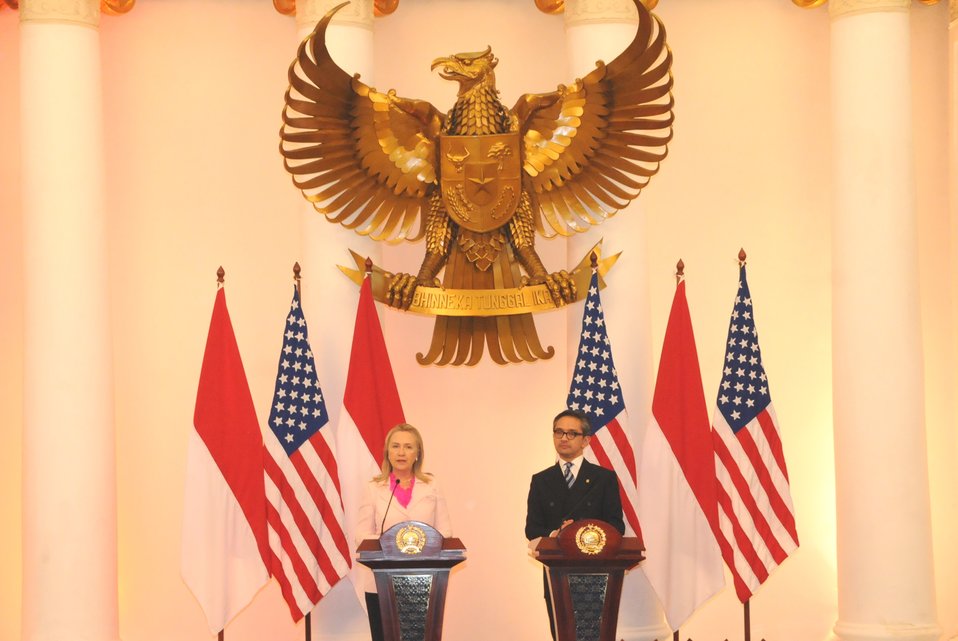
Secretary Clinton With Foreign Minister Natalegawa in Indonesia

U.S. Secretary of State Hillary Rodham Clinton delivers remarks with Indonesian Foreign Minister Raden Mohammad Marty Muliana Natalegawa during a press conference after their meeting in Jakarta, Indonesia, September 3, 2012.